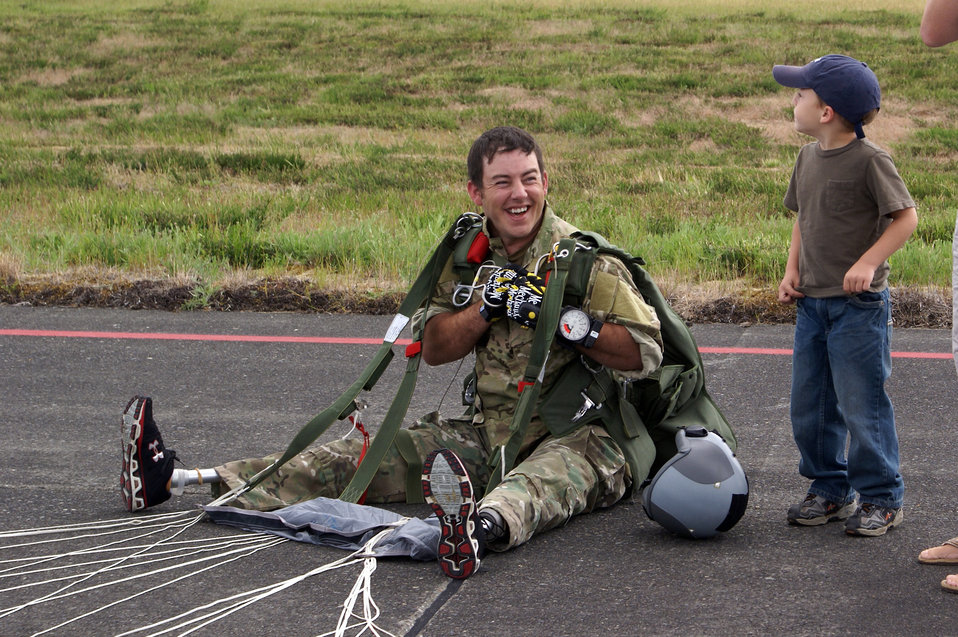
Special tactics squadron double amputee makes historic jump

Staff Sgt. Shaun Meadows shares a laugh with his son after completing his jump June 14, 2010. Sergeant Meadows is assigned to the 22nd Special Tactics Squadron at Joint Base Lewis-McChord, Wash.